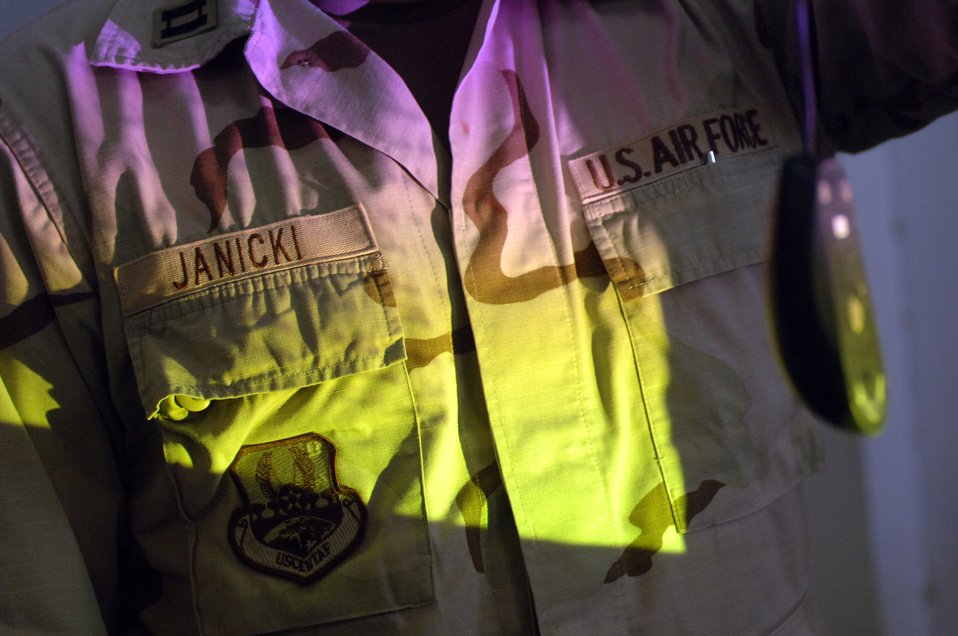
Captain teaches computer classes to Afghans

Capt. Ted Janicki explains why a computer mouse is called a mouse while he teaches a computer fundamentals course to Afghan national army soldiers April 2 at the Kabul Military Training Center in Afghanistan. Captain Janicki is an embedded training team member assigned to Camp Black Horse at KMTC and helps mentor Afghan soldiers. His mission is part of a larger mission to help Afghan's help themselves.